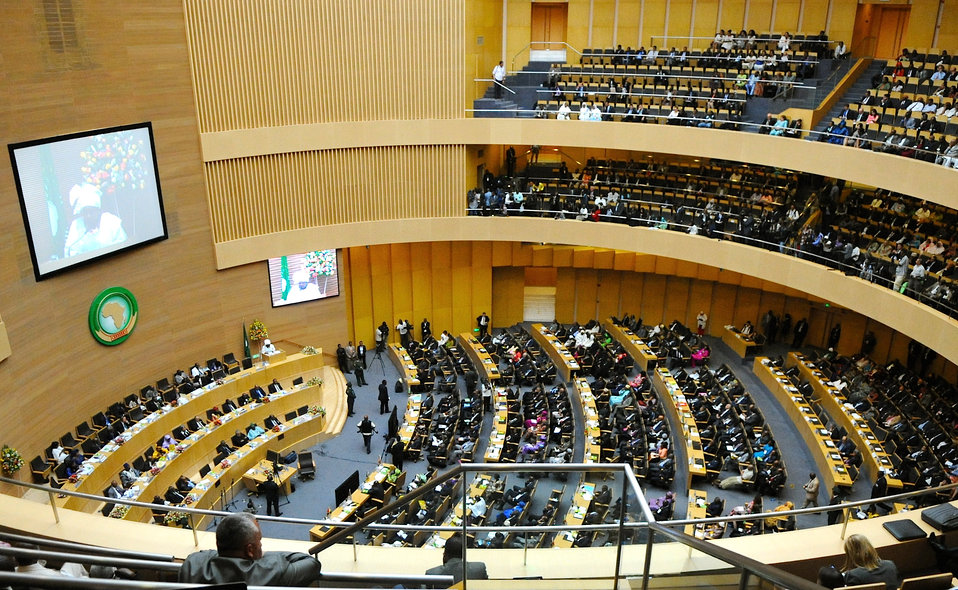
50th Anniversary African Union Summit in Addis Ababa, Ethiopia

An overview of the 50th anniversary African Union Summit in Addis Ababa, Ethiopia, as seen on May 25, 2013.